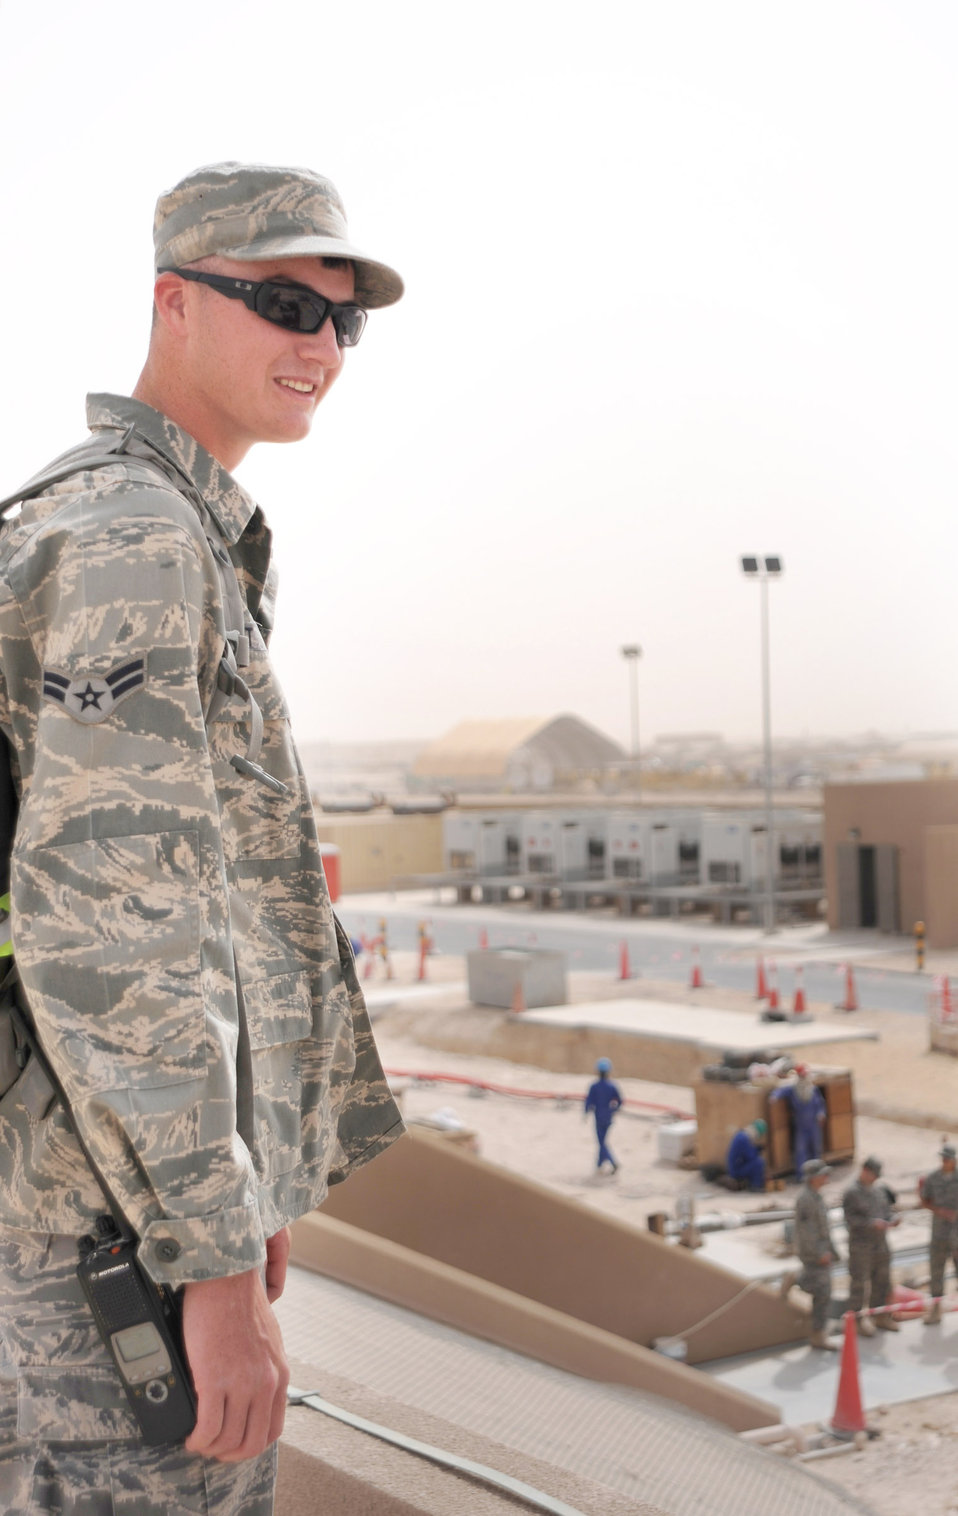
Escort flight Airmen vigilant for threats

Airman 1st Class Luke Hoyt performs an overwatch of off-base contract workers ensuring the security of the area and the safety of servicemembers Feb. 23 at an air base in Southwest Asia. Airman Hoyt is a 379th Expeditionary Civil Engineer Squadron third country national escort. He hails from Dubuque, Iowa, and is deployed from Spangdahlem Air Base, Germany.